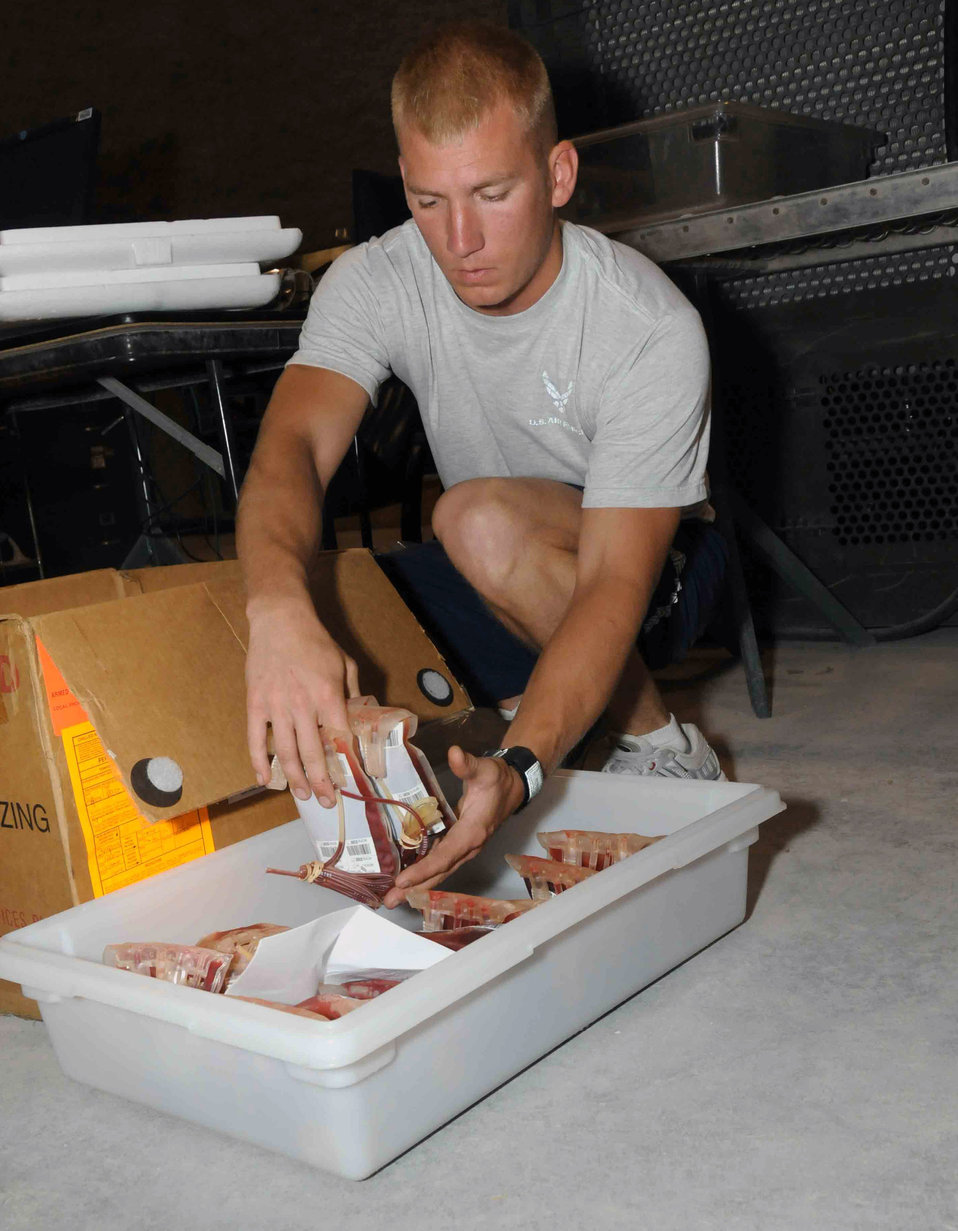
Bloodline for AOR

Airman 1st Class Kevin Spalding moves units of blood to a tray so he can verify the information on each individual bag to a master list April 27 at the Blood Transshipment Center in Southwest Asia. The units of blood are donated from servicemembers all over the world, and base volunteers help to process it. Airman Spalding is a 379th Expeditionary Maintenance Squadron aerospace ground equipment journeyman deployed from McConnell Air Force Base, Kan.